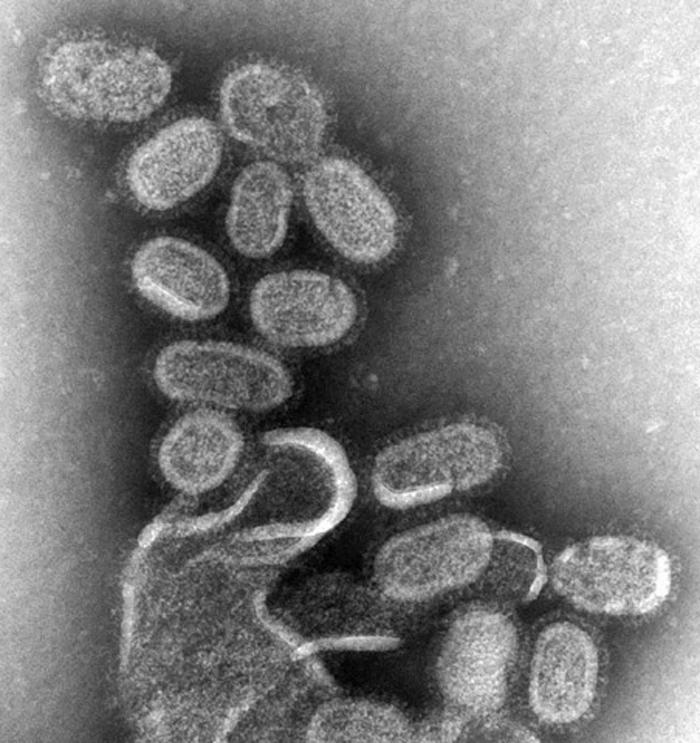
This negative stained transmission electron micrograph (TEM) shows recreated 1918 influenza virions that were collected from supernatants of 1918-infected Madin-Darby Canine Kidney (MDCK) cells cultures 18 hours after infection. To separate these virions, the MDCK cells are spun down (centrifugation), and the 1918 virus in the fluid is immediately fixed for negative staining. The solid mass in lower center contains MDCK cell debris that did not spin down during the procedure. See PHIL 11098 for a colorized version of this image.